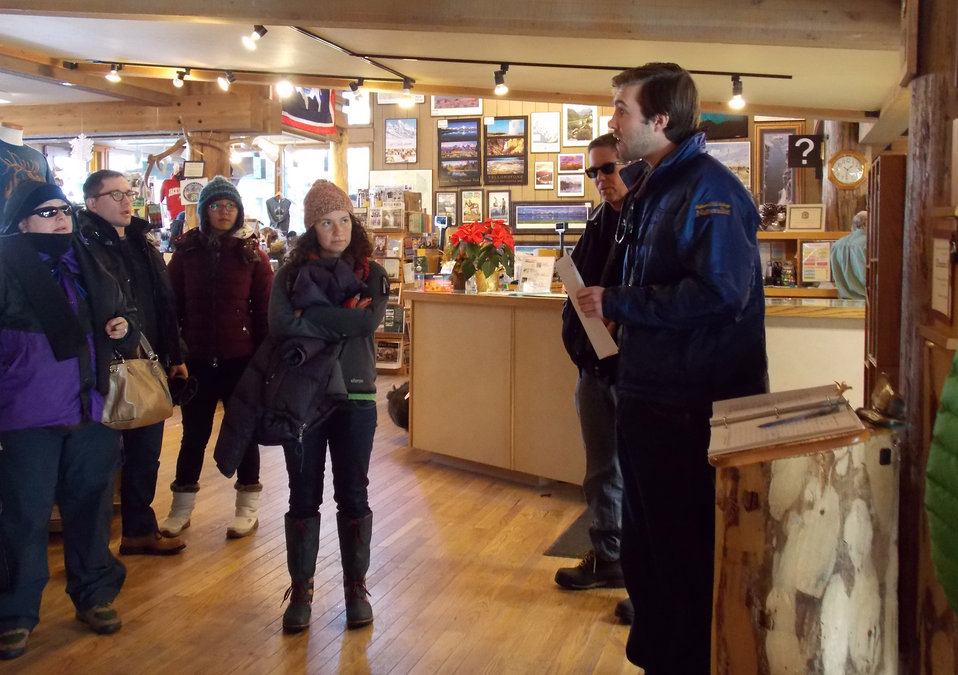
Pre-tour Information

National Elk Refuge winter wildlife excursions begin inside the visitor center, where the group meets with the naturalist guiding the tour. They receive some general information about the tour before heading out on the two-hour trip.